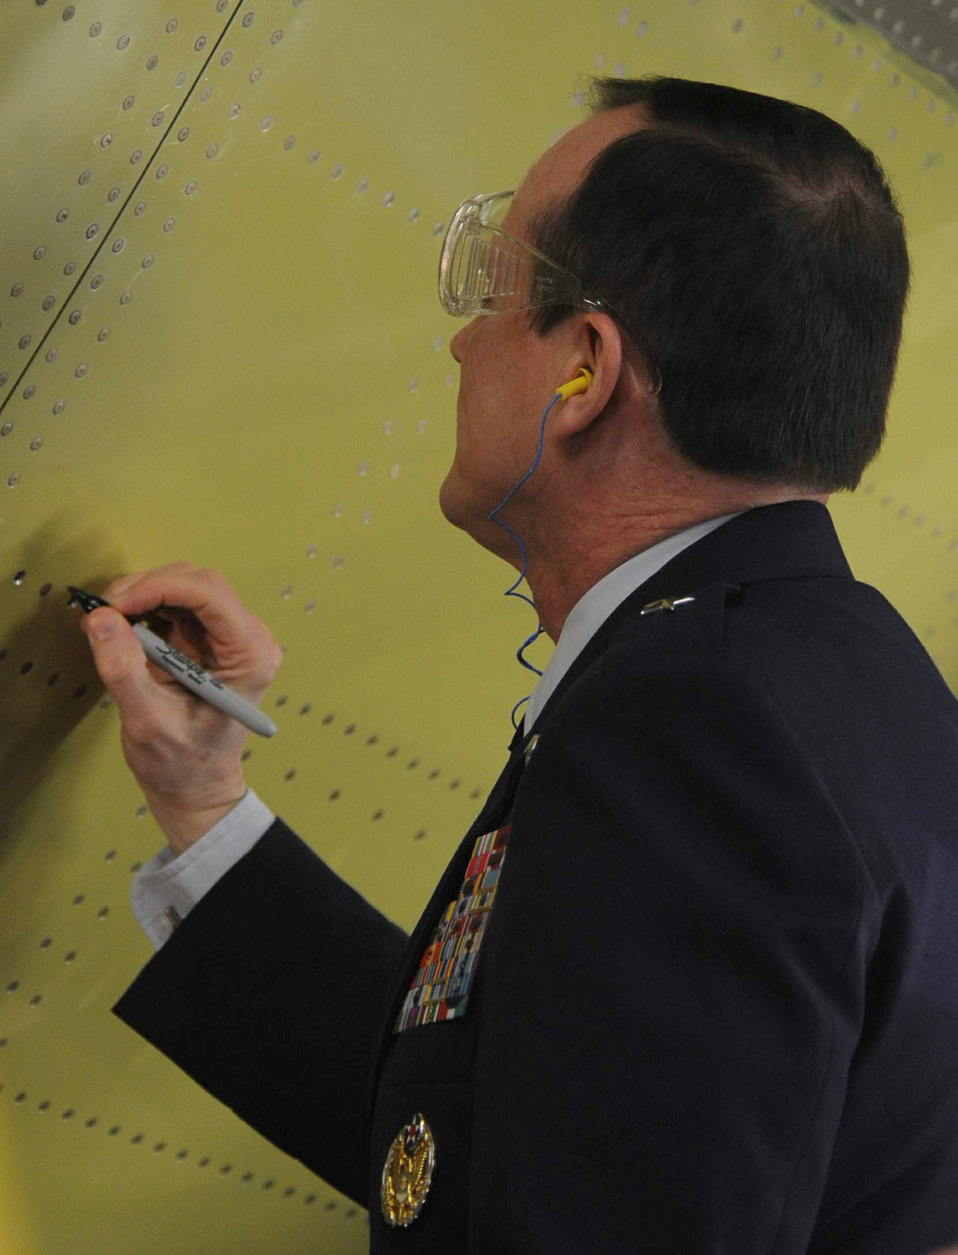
Multinational consortium celebrates milestone of first C-17

In his multinational role as chairman of the 12-nation Strategic Airlift Capability consortium, Brig. Gen. Richard Johnston signed the forward fuselage of the program's first C-17 Globemaster III after having driven a ceremonial rivet into the airframe during the